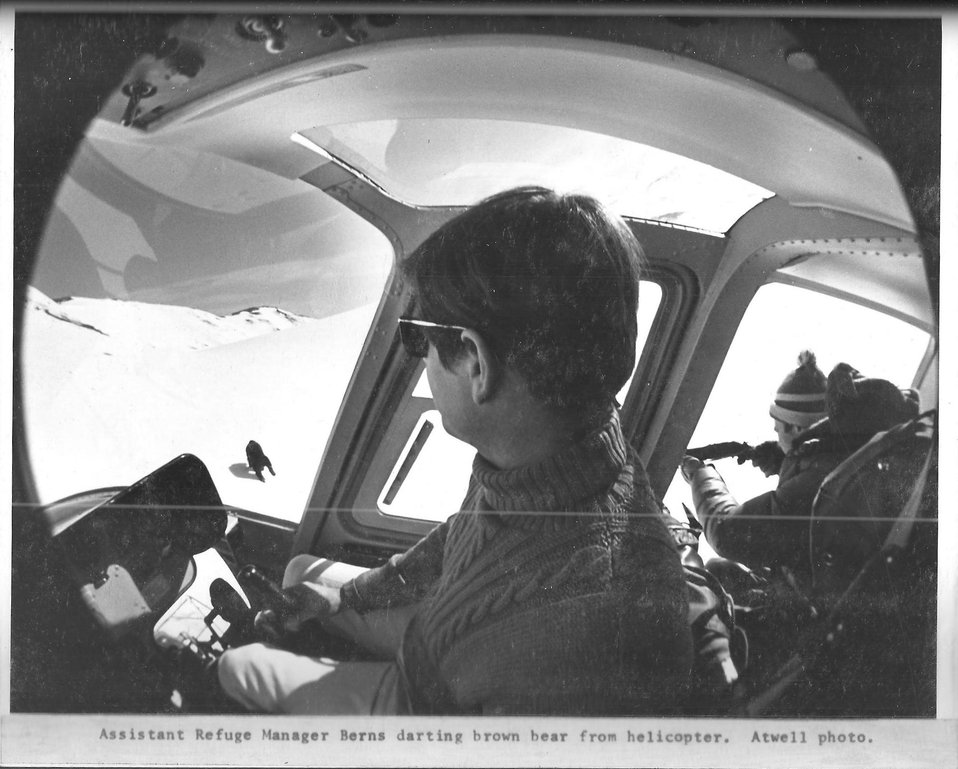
(1972) Fish-Eye Lense Bear Darting

Credit: USFWS

Source and Contact: Kodiak National Wildlife Refuge